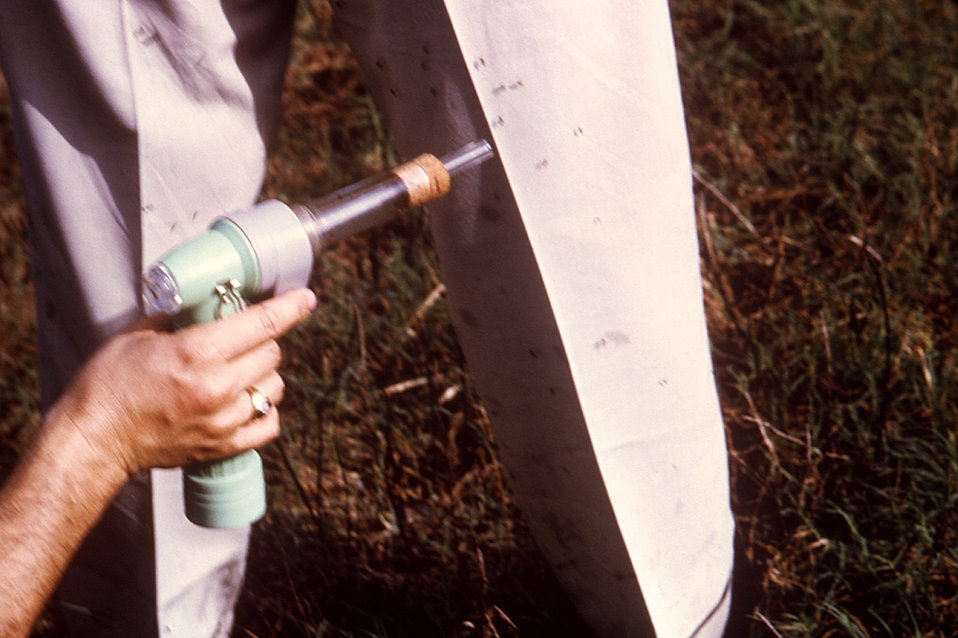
Using a mechanical hand-held aspirator, this CDC field researcher was collecting mosquitoes that had landed on the pants legs of a fellow researcher.